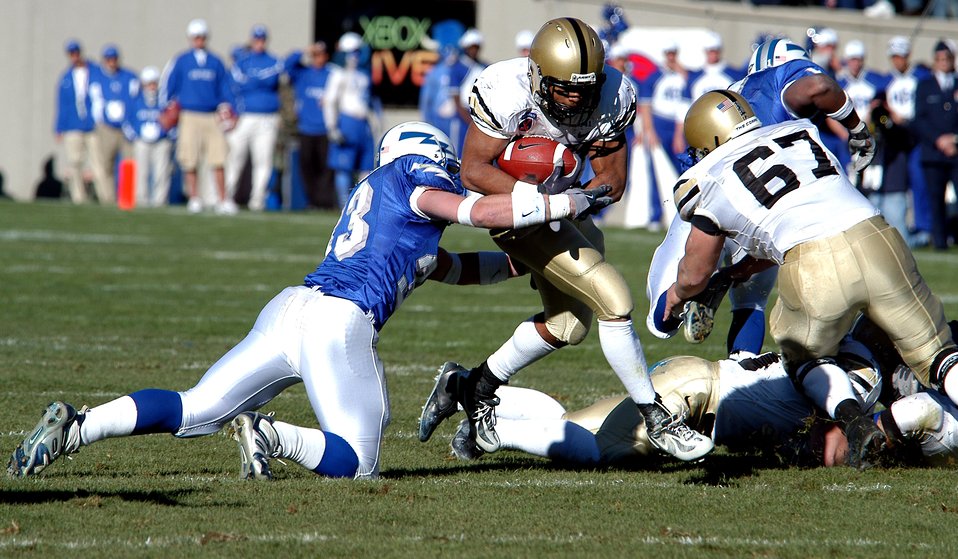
Army vs Air Force

U.S. AIR FORCE ACADEMY, Colo. (AFPN) -- Falcon linebacker Drew Fowler grabs Army running back Carlton Jones who rushed for 146 yards and a touchdown.